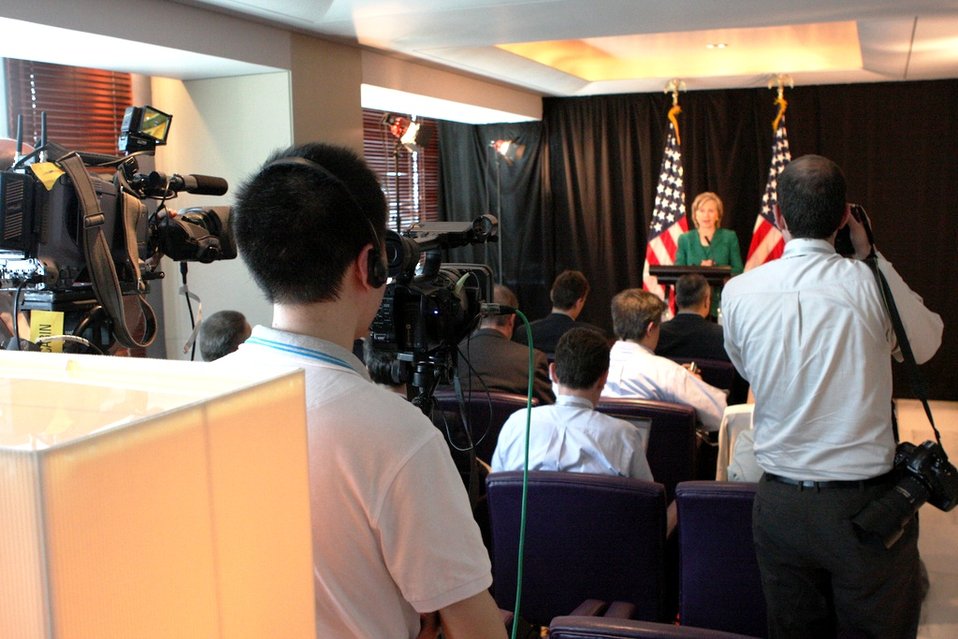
Secretary Clinton Delivers Remarks on Cheonan Incident

U.S. Secretary of State Hillary Rodham Clinton delivers remarks addressing the Cheonan incident to the traveling press corps in Beijing, China, on May 23, 2010.